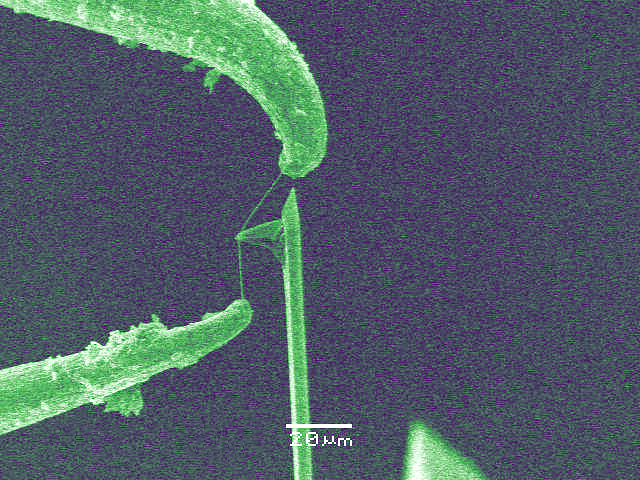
Nanoknife

Scanning electron micrograph of a prototype 'nanoknife' shows a single carbon nanotube stretched between two tungsten needles. Triangular probe is the tip of an atomic force cantilever used to determine the breaking point of the knife. (Color added for clarity.)